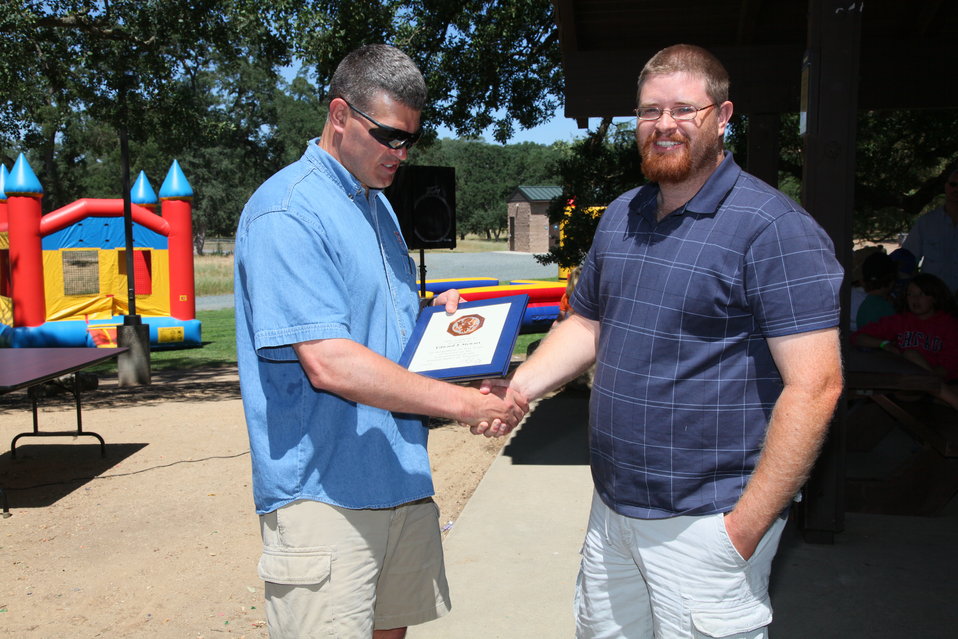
2011 Annual Picnic